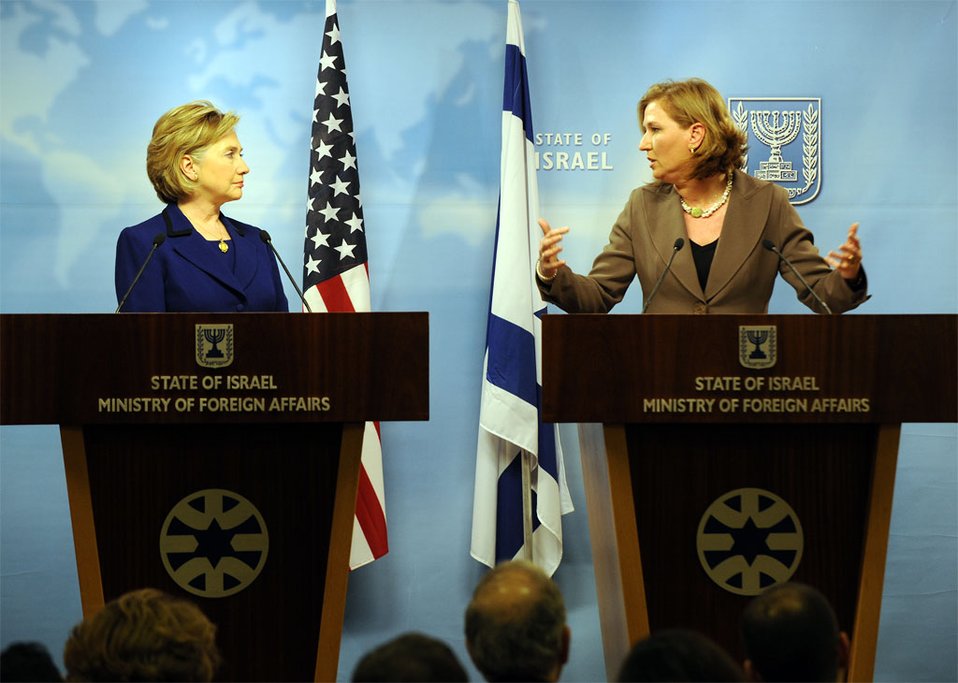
Secretary Clinton With Israeli Foreign Minister

U.S. Secretary of State Hillary Rodham Clinton at the Foreign Ministry Press Conference following meeting with Foreign Minister Tzippi Livni in Jerusalem March 3, 2009